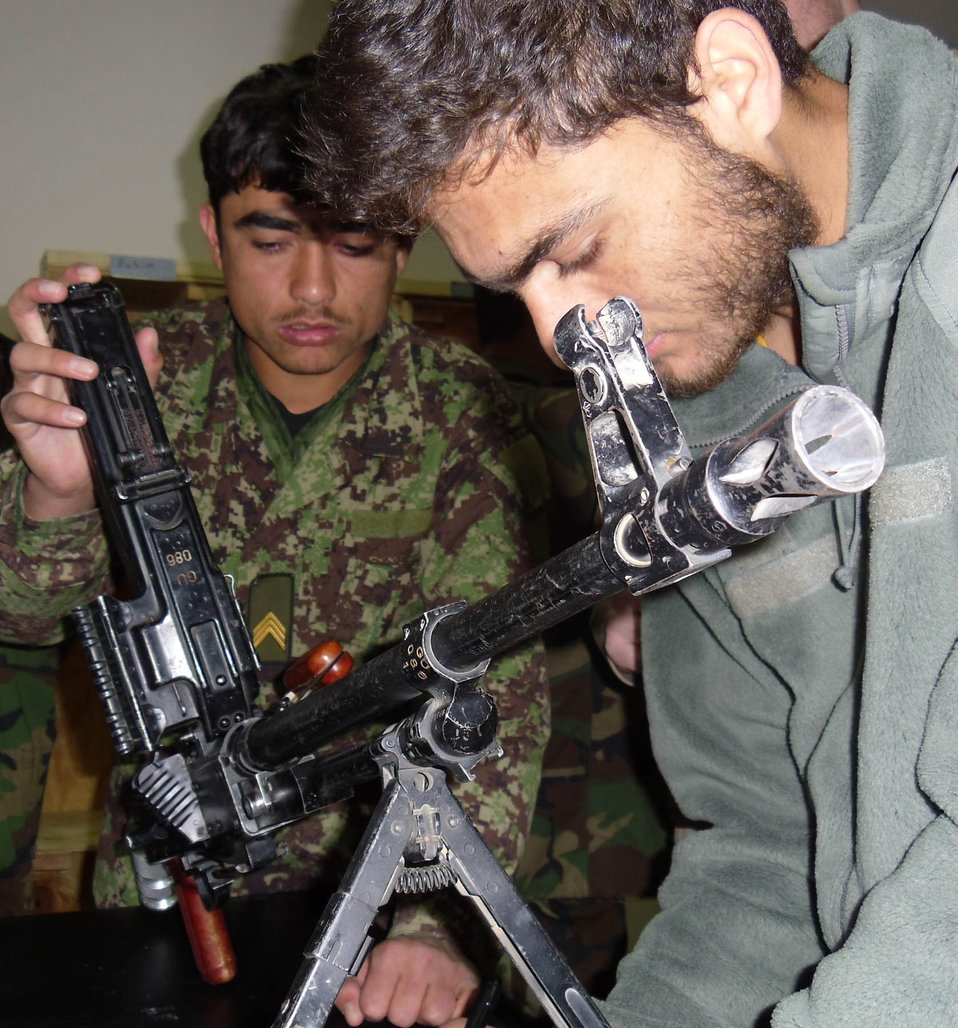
Afghan flying crew chiefs

An Afghan airman (left) does professional military knowledge training on a general purpose machine gun March 8, 2011, at Shindand, Afghanistan, for part of his training to be a flying air crew chief in the Afghan air force.